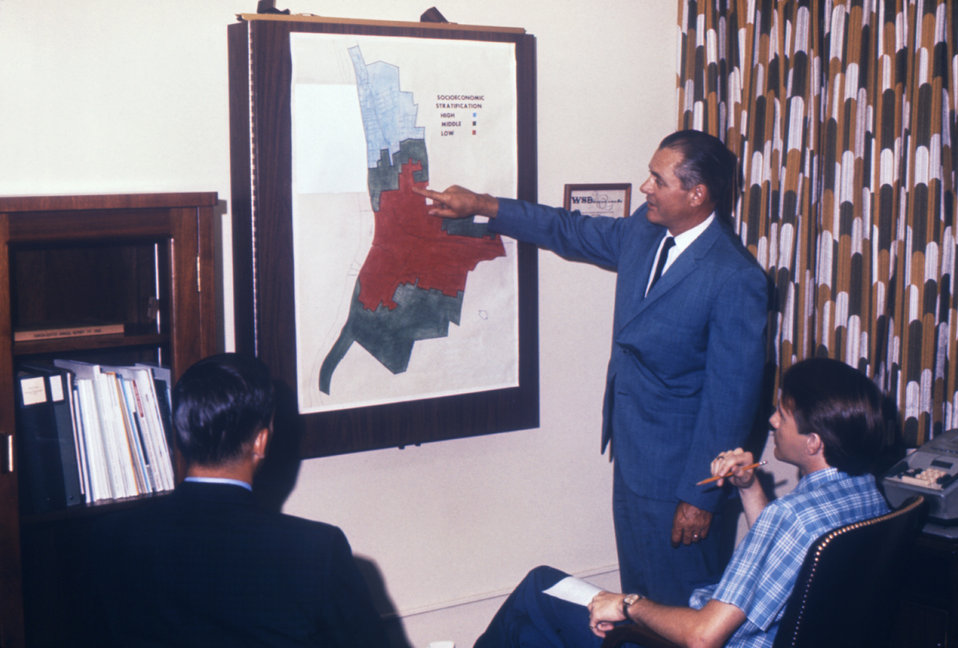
This CDC supervisor was instructing personnel on the inspection of socioeconomic-based variances in sanitary conditions.